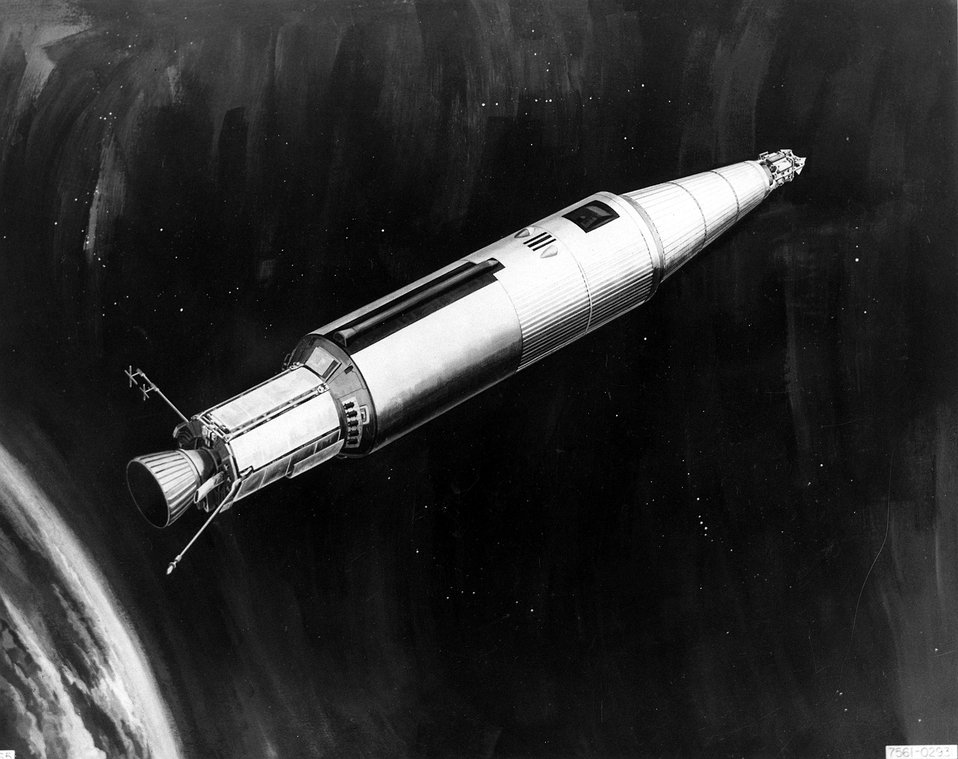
The 500-watt SNAP 10A auxiliary power unit was operated successfully at full power for 43 days in space.